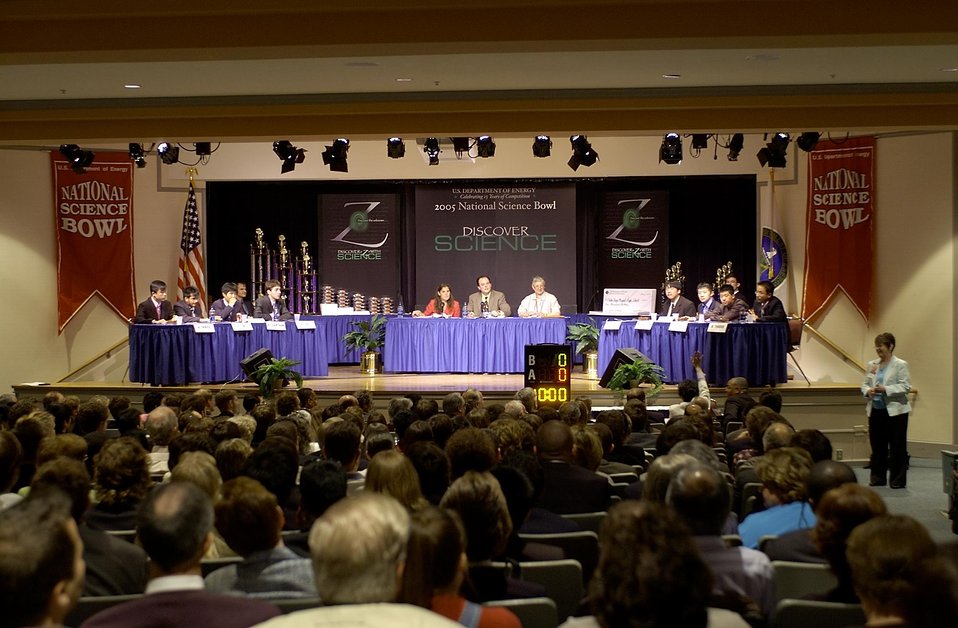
THE STAGE AT THE NATIONAL 4-H CENTER, CHEVY CHASE, MARYLAND WAS THE SETTING FOR THE 2005 NATIONAL SCIENCE BOWL.

ON THE LEFT SIDE, THE TEAM FROM GEORGE WALTON COMPREHENSIVE SCHOOL, MARIETTA, GA IS FACING THE MISSION SAN JOSE HIGH SCHOOL, FREMONT, CA. THE DEPARTMENT OF ENERGY CREATED THE NATIONAL SCIENCE BOWL IN 1991 TO ENCOURAGE HIGH SCHOOL STUDENTS TO EXCEL IN MATH AND SCIENCE AND TO PURSUE CAREERS IN THESE FIELDS. OVER 300 SENIOR HIGH SCHOOL STUDENTS, CHAMPIONS FROM 63 REGIONAL COMPETITIONS ATTENDED THE 2005 NATIONAL SCIENCE BOWL.